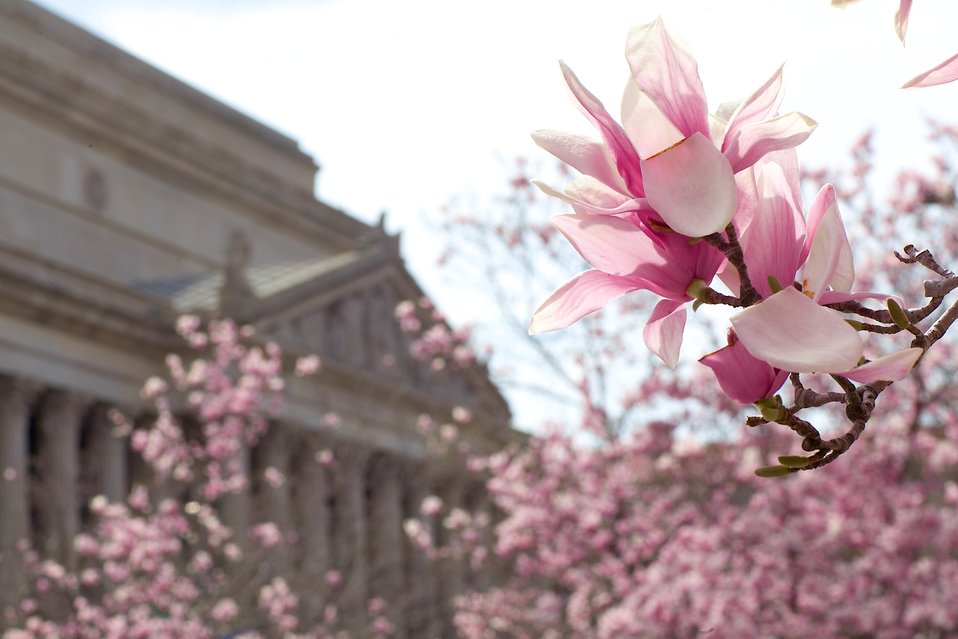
Blooming Magnolias in Indiana Plaza, catty-corner from the National Archives in Washington, DC